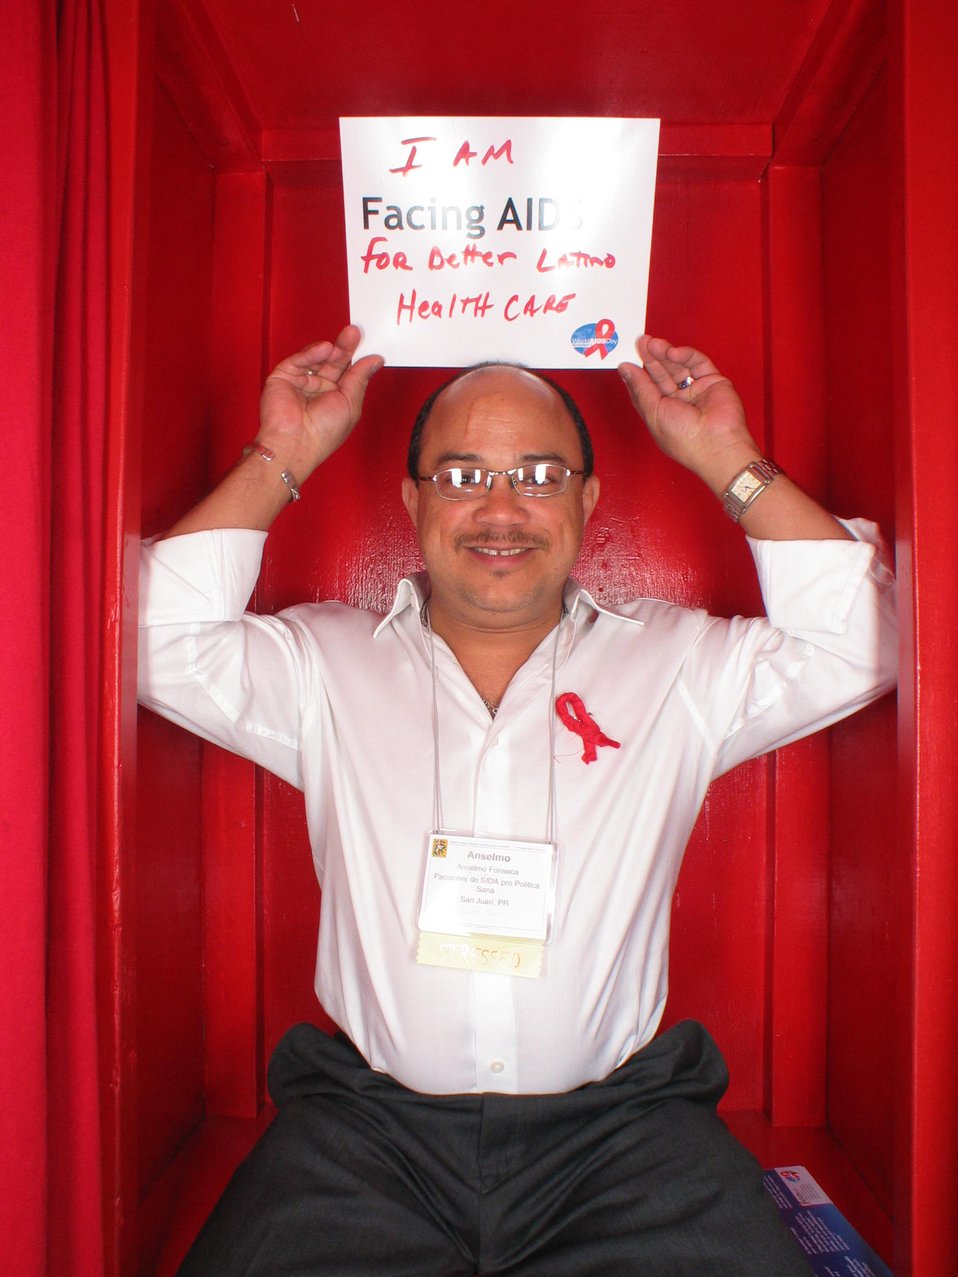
I am Facing AIDS for better Latino Health Care.